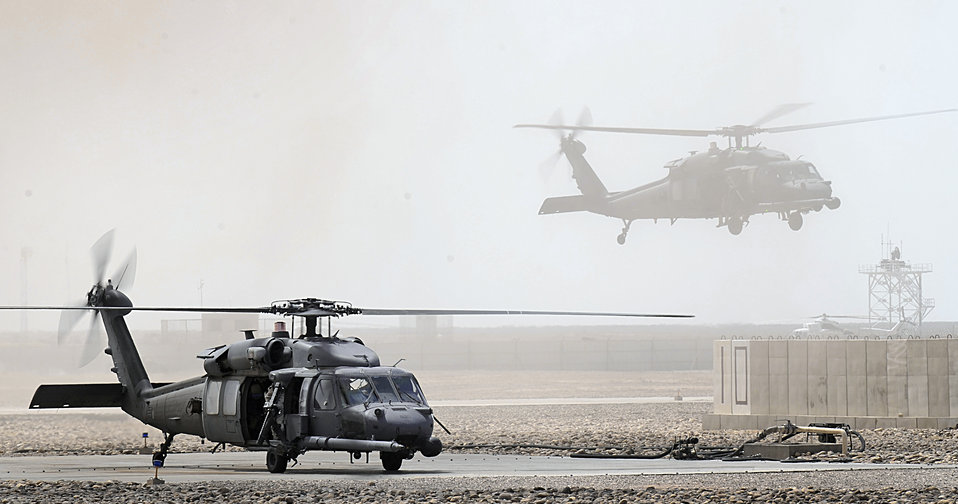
Flight engineers: Critical component to combat search, rescue mission

A HH-60G Pave Hawk refuels after conducting combat operations June 23 in the Hemland Province, Afghanistan.